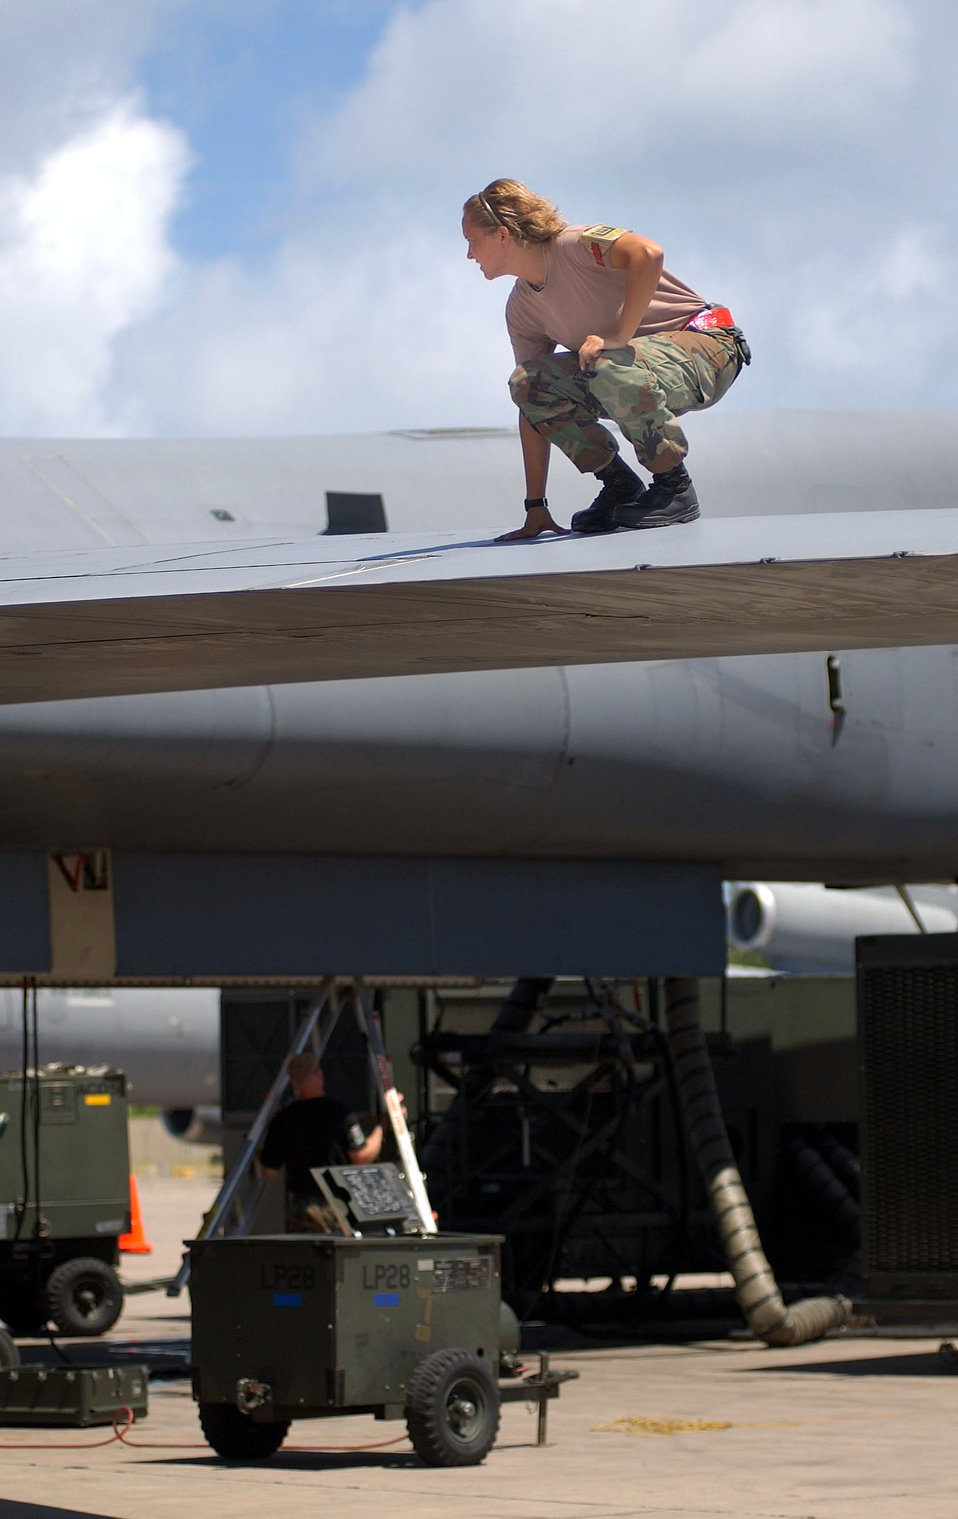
Post flight inspection

OPERATION ENDURING FREEDOM -- An Air Force crew chief from the 28th Air Expeditionary Wing conducts a post flight inspection on a B-1B Lancer in support of Operation Enduring Freedom. The first production B-1B flew in October 1984, and the first aircraft was delivered to Dyess Air Force Base, Texas, in June 1985, with initial operational capability on Oct. 1, 1986. The final B-1B was delivered May 2, 1988.